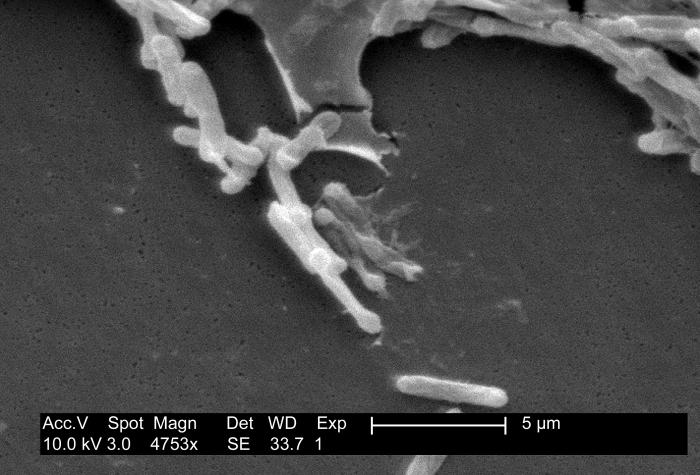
This micrograph depicts Gram-positive C. difficile bacteria from a stool sample culture obtained using a .1�m filter.